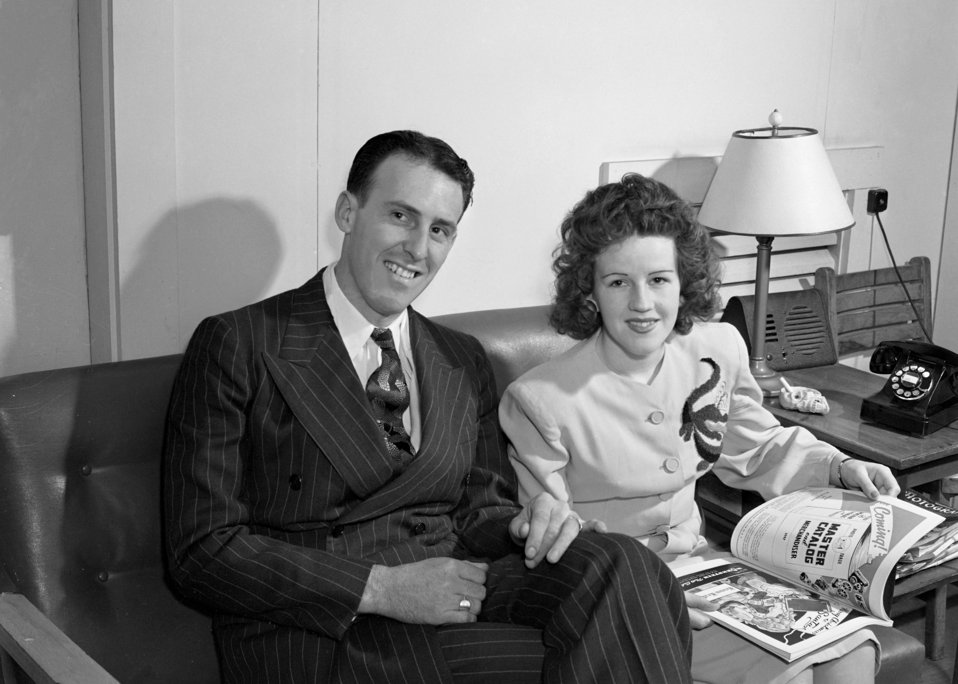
Australian War Bride Oak Ridge 1947

3309-3 DOE photo Ed Westcott 2-21-1947 Mr. and Mrs. J.L. Sluter Oak Ridge Tennessee